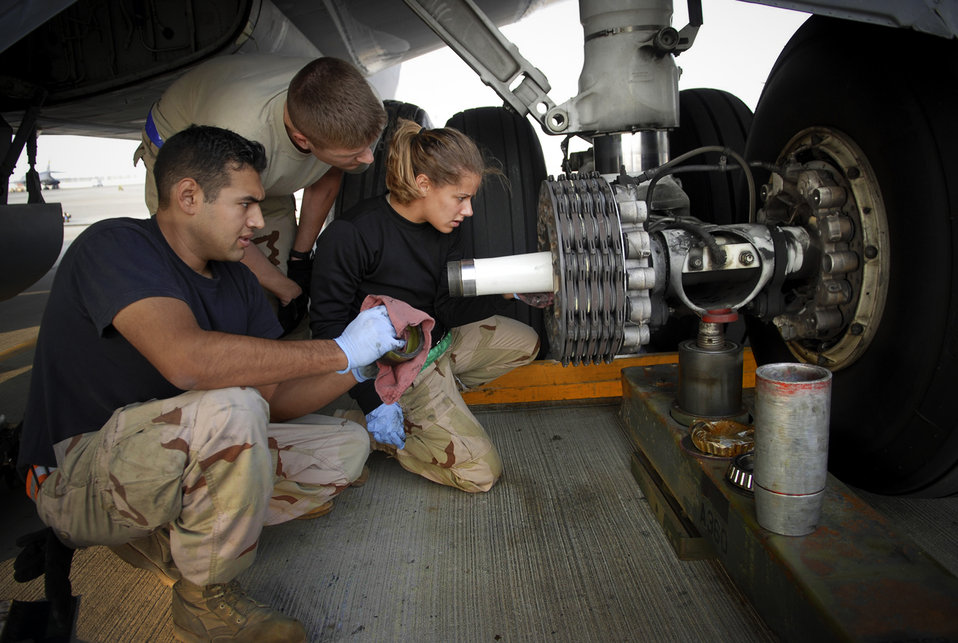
Ready for a change

At a Southwest Asia air base Jan. 5., Staff Sgts. Ruben Mariscal (left) and Frank Veres with Airman 1st Class Abigail Smith prepare to install a new wheel on a KC-135 Stratotanker. They are assigned to the 379th Expeditionary Aircraft Maintenance Squadron.